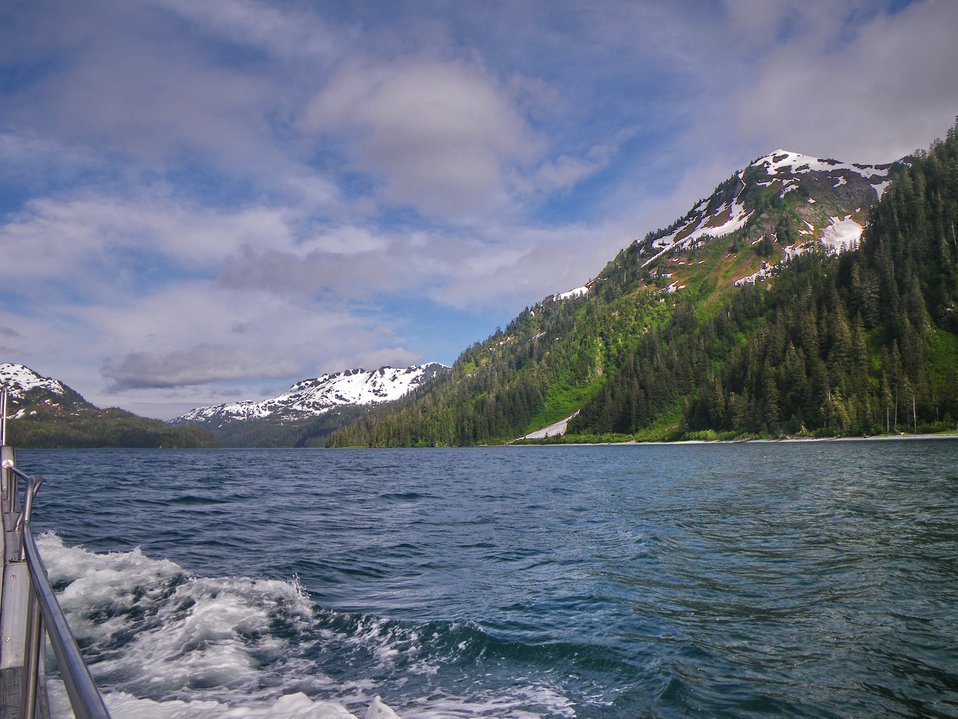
A view in Bainbridge Passage